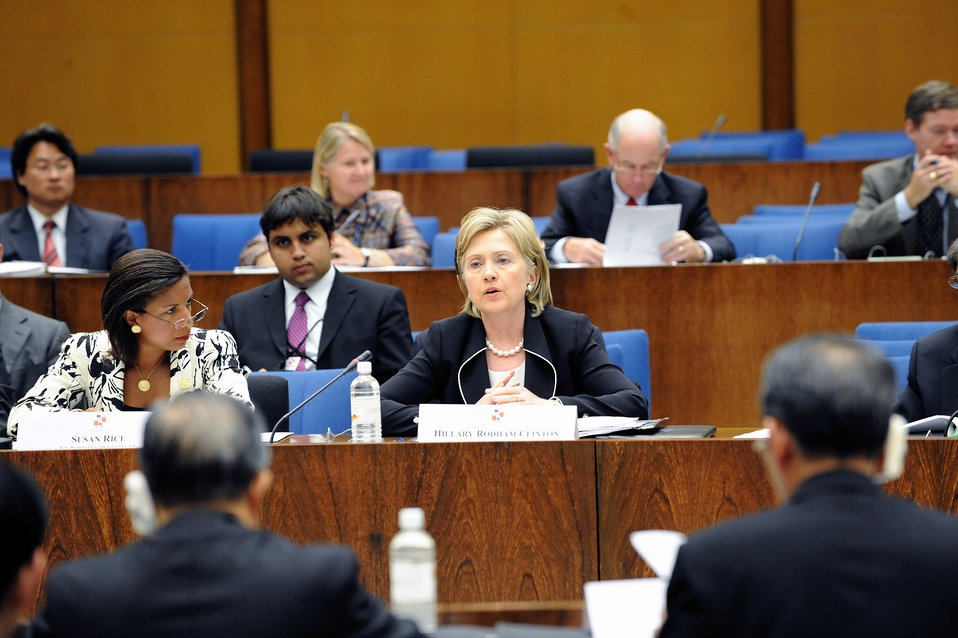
Secretary Clinton Attends U.S.-China Strategic and Economic Dialogue

U.S. Secretary of State Hillary Rodham Clinton at the Strategic Track Session 1 on Bilateral Relations during the U.S.-China Strategic and Economic Dialogue at the U.S. Department of State in Washington, DC July 27, 2009.